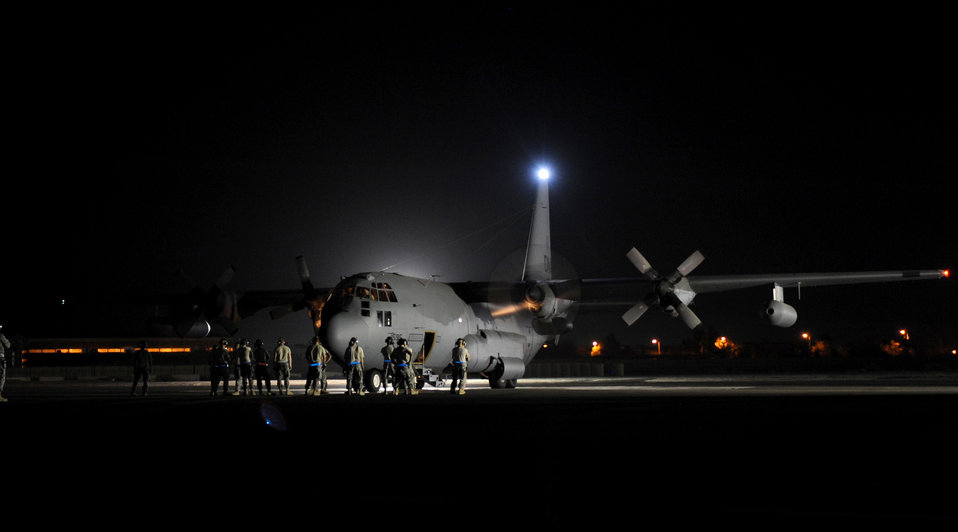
EC-130H Compass Call

An EC-130H Compass Call assigned to the 43rd Expeditionary Electronic Combat Squadron is prepped for departure Aug. 29, 2010, I Southwest Asia. The plane's unit, the 43rd Expeditionary Electronic Combat Squadron, has been part of the 386th Air Expeditionary Wing for 6.5 years and is moving to another base in the U.S. Central Command area of responsibility because of the responsible drawdown of forces in Iraq. The EC-130H provides U.S. forces with the ability to jam enemy communications.